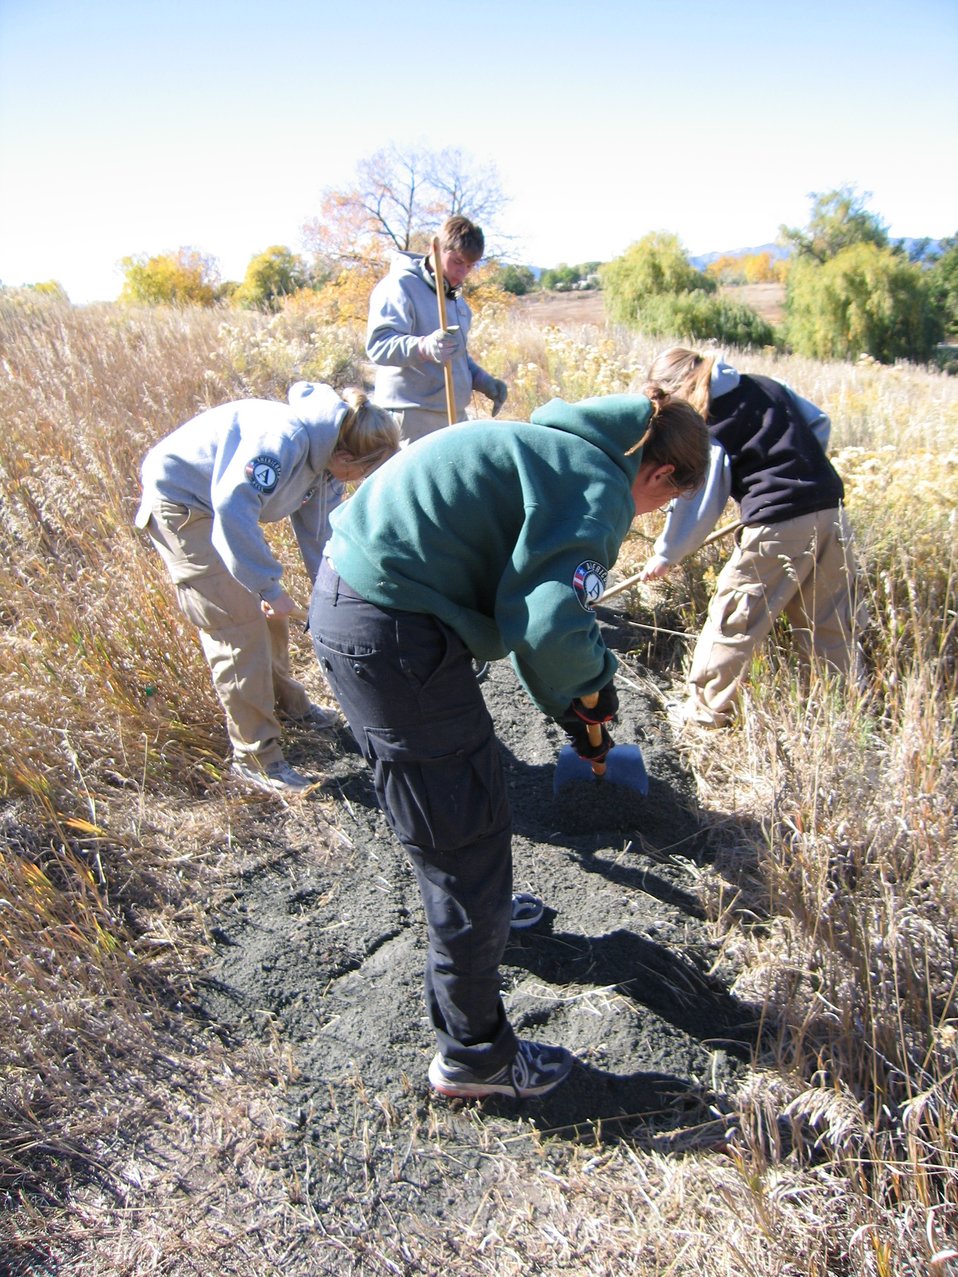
Americorps Trail